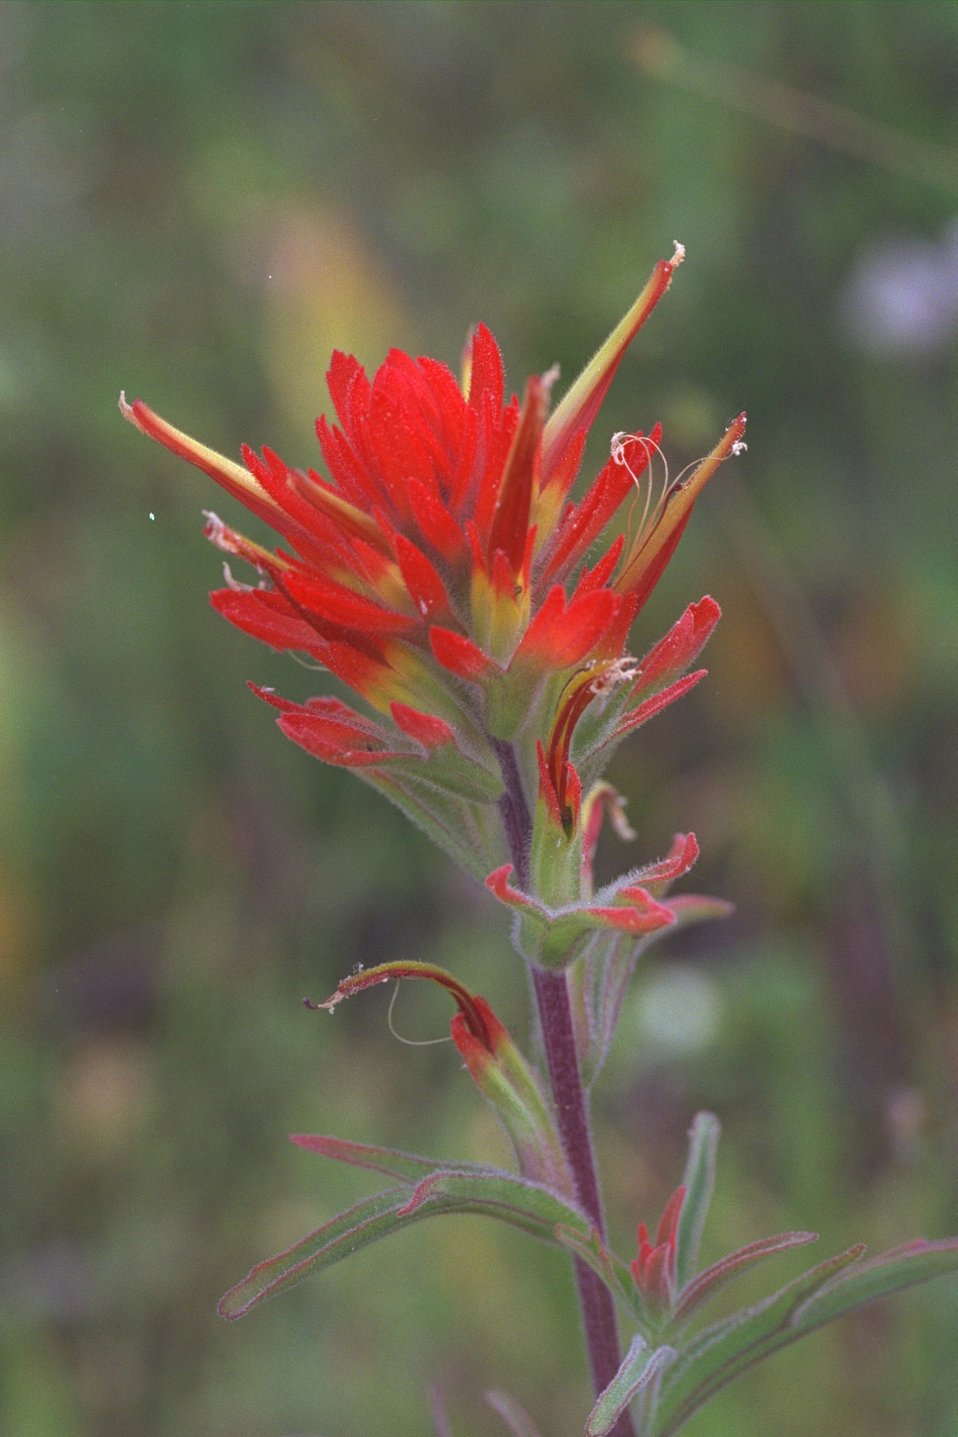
Indian Paintbrush (Castilleja sp.).